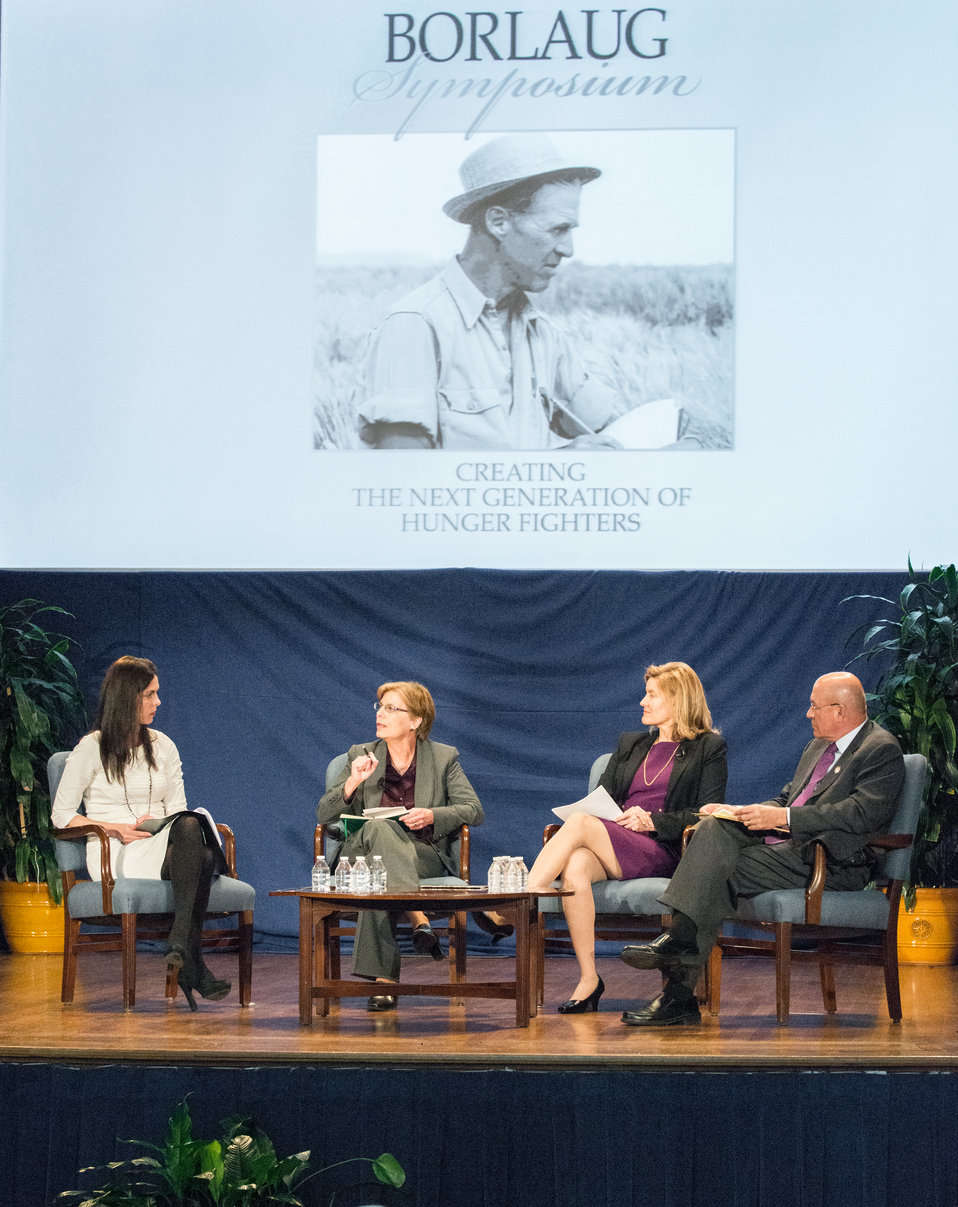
The Borlaug Symposium panel 'Innovation in Action'; is moderated by Borlaug Institute for International Agriculture at Texas A and M Director of External Relations (granddaughter of Dr. Norman Borlaug) Julie Borlaug, and features U.S. Agency for International Development (USAID) Feed the Future Chief Scientist Julie Howard, Global Harvest Initiative Executive Director Margaret Ziegler and Monsanto Chief Technology Officer Robb Farley at the U.S. Department of Agriculture (USDA) Jefferson Auditorium in Washington, D.C., on Tuesday, Mar. 25, 2014. The symposium highlights current efforts addressing global hunger. The symposium panels will feature high school and university students, as well as, scientists and policy advisors at USAID, USDA and Non-Governmental Organizations (NGO). Questions from students and interns are given priority to panelists. Lightening presentations will have leading students and individuals present what they are doing to help achieve Dr. Borlaug’s vision of creating the next generation of hunger fighters. The symposium was planned in partnership with: USAID, Cornell University, Iowa State University, University of Minnesota, The Norman Borlaug Institute for International Agriculture, Texas A and M University, and the World Food Prize.